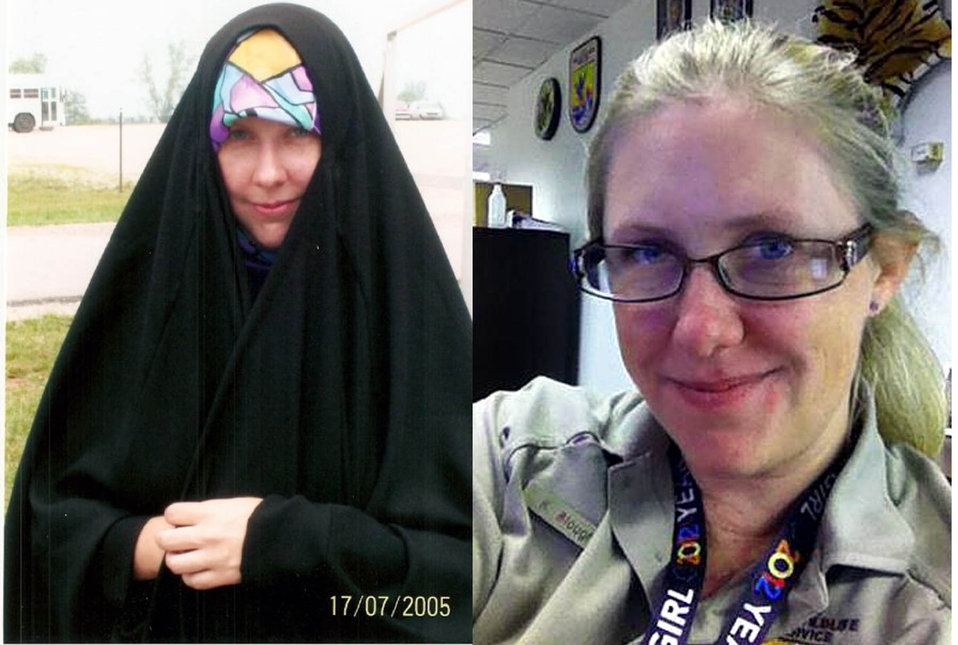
Katrina Blough.
Katrina Blough joined the US Army Reserves in Knoxville, TN in 1993, starting as an 88K- Boat Driver, then transferred to a Civil Affairs Battalion to work as a 38A Civil Affairs Specialist. In 1999 I was sent to the Defense Language Institute in Monterey, CA to study Arabic, then moved to Ft. Huachuca to join a Military Intelligence unit. She stayed on active duty with MI until I retired with a medical discharge in 2005. My favorite assignment (see photos) was working with Iraqi Soldiers at Camp Atterbury, IN during role-playing and pre-deployment exercises for National Guard and Reserve units. .
.
“I enjoyed my time in the Army and miss my Army friends,” said Blough. “I'm proud to say that I served my country and would do it all over again if I had the chance! .
.
Katrina is a Law Enforcement Support Assistant for the Port of Louisville, Office of Law Enforcement.